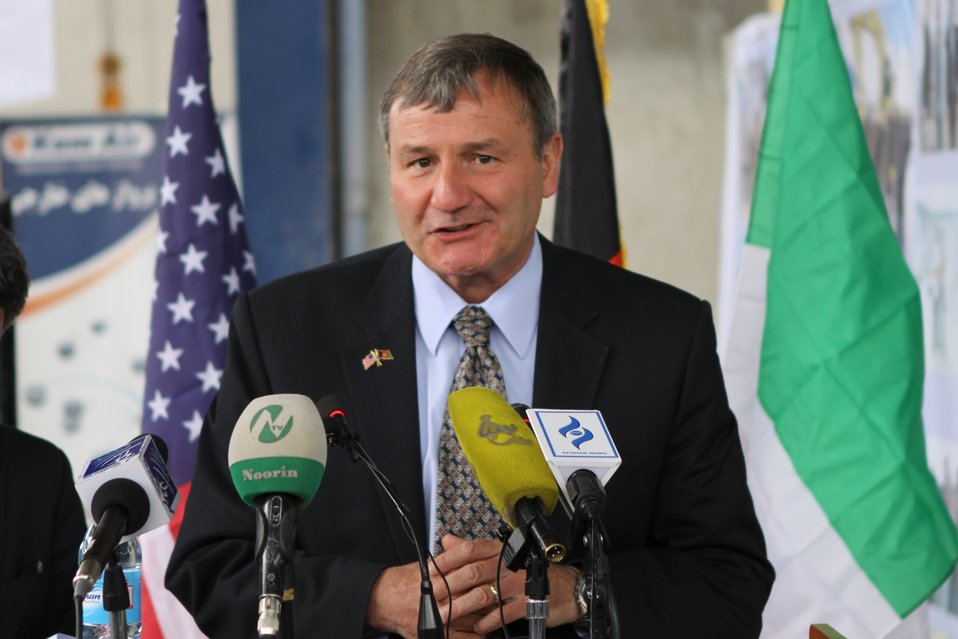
100525 Hirat Marble Conference 223